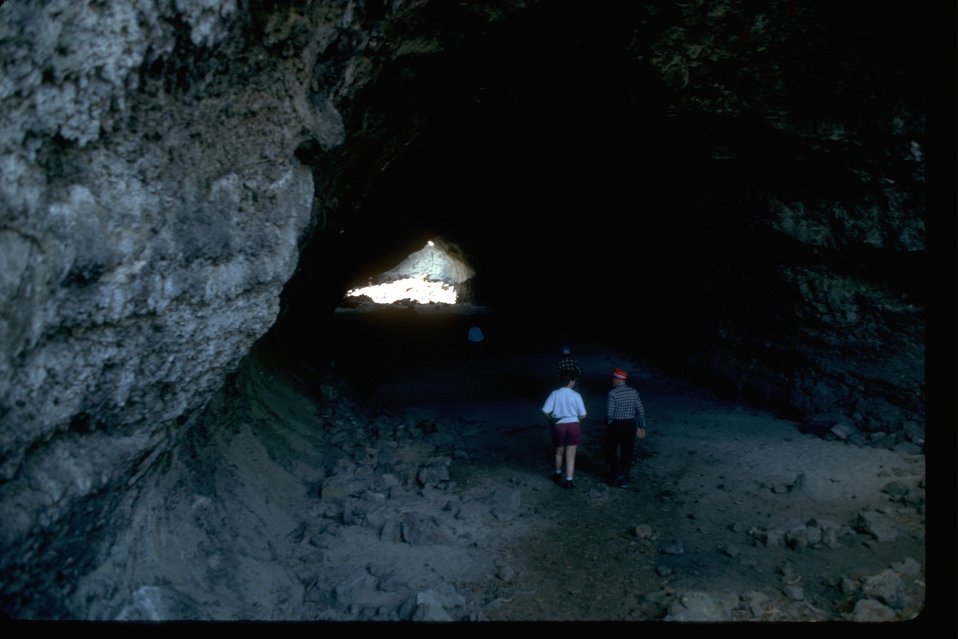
Visitors walking through Derrick's Cave.